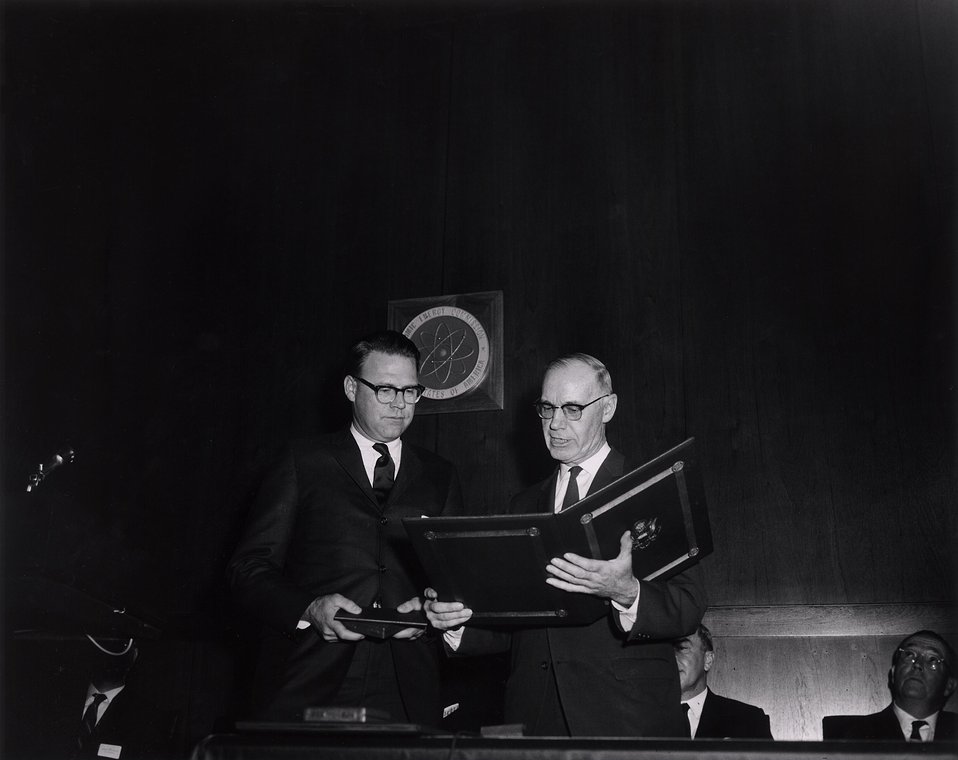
E.O. Lawrence Awards, 1967. Carnegie Institution Auditorium. April 27, 1967. L- Dr. Robert N. Thorn. R- Dr. L.R. Hafstad.